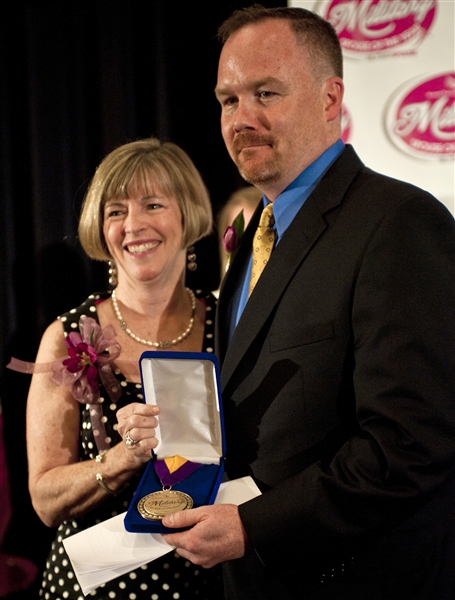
Military Spouse of the Year

Deanie Dempsey, wife of the chairman of the Joint Chiefs of Staff, presents Jeremy Hilton, husband of Air Force Lt. Col. Renae Hilton, with a medal recognizing him as the 2012 Military Spouse of the Year during the 2012 Military Spouse of the Year ceremony at Marine Barracks Washington, May 10, 2012.